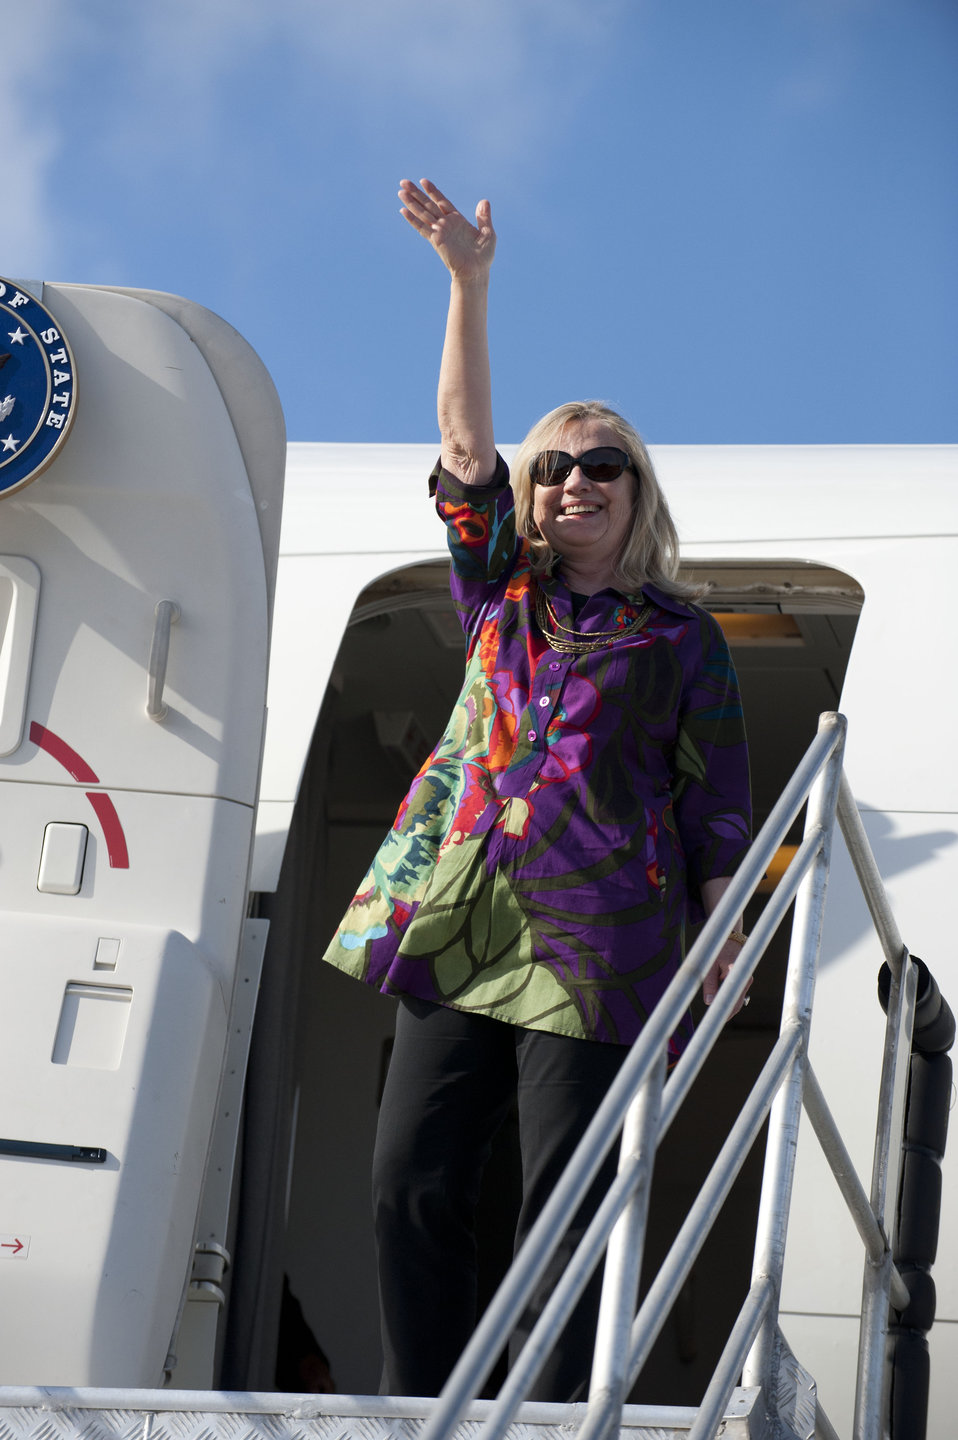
Secretary Clinton Waves While Departing the Cook Islands

U.S. Secretary of State Hillary Rodham Clinton waves as she boards her airplane to depart Rarotonga, Cook Islands, September 2, 2012.